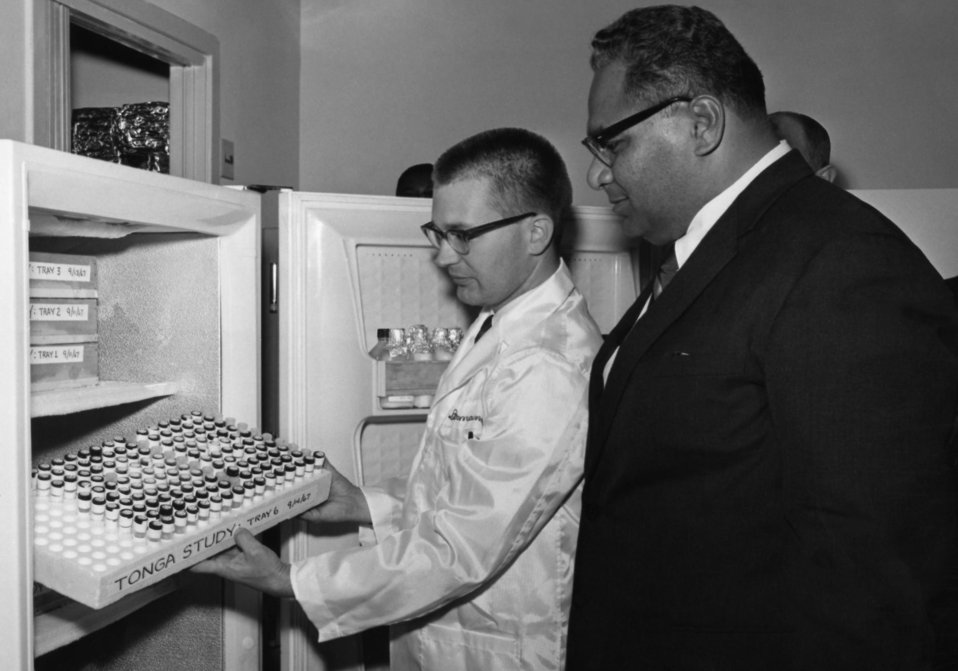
This photograph, taken during a 1967 visit to the Centers for Disease Control by the Prince Tu'ipelehake of Tonga, shows a CDC laboratorian as he was showing the Prince specimens labeled under the heading the 'Tonga Study'.